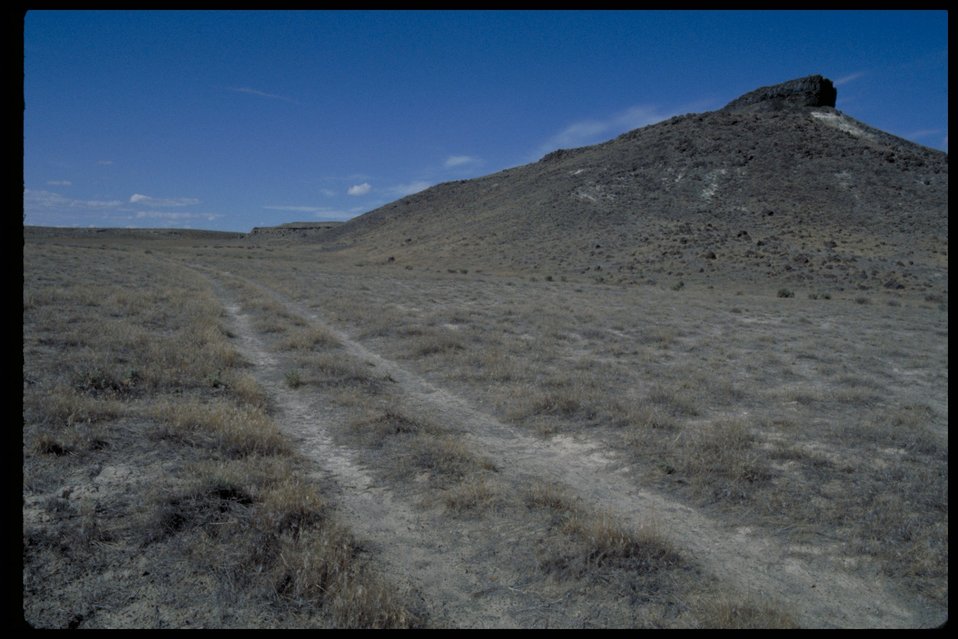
Oregon Trail near Wildhorse Butte Lower Snake River District